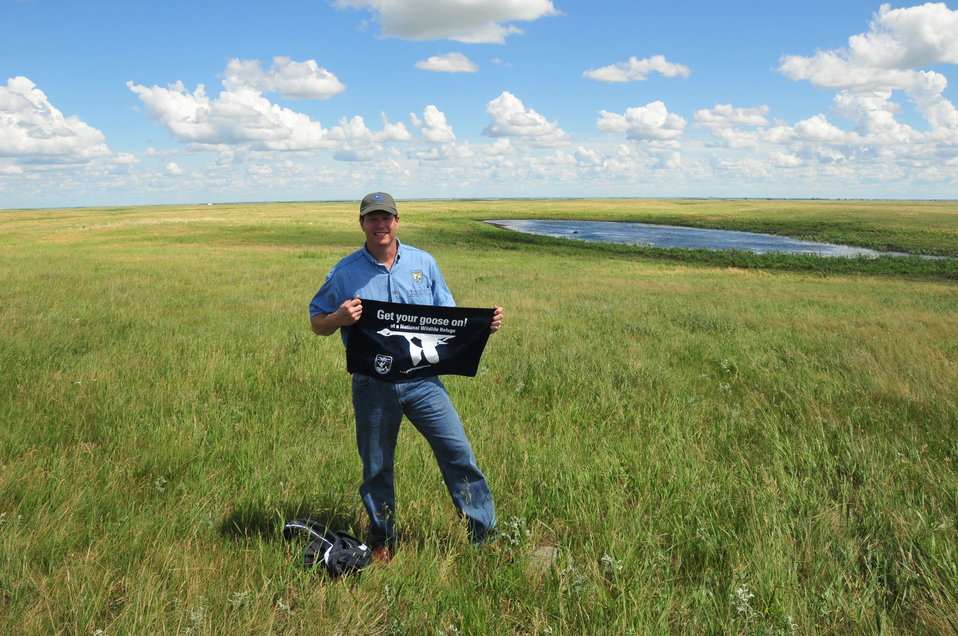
Get Your Goose On!

The national meeting for regional chiefs of the National Wildlife Refuge System is held three times a year in different locations around the country. This 2012 meeting took place in McPherson County, South Dakota, and focused on the Dakota Grassland Conservation Area.

This photo was taken on the Wade Weiszharr and Family Ranch, which contains perpetual U.S. Fish and Widlife grassland and wetland easements. This site is also located in the heart of Prairie Pothole Region, making it extremely productive migratory bird habitat and a great place to “Get your goose on!”

Here David Viker, Refuge Chief of Region 4, 'gets his goose on' with a scenic view of the grasslands and wetlands found on the Wade Weiszharr Family Ranch!